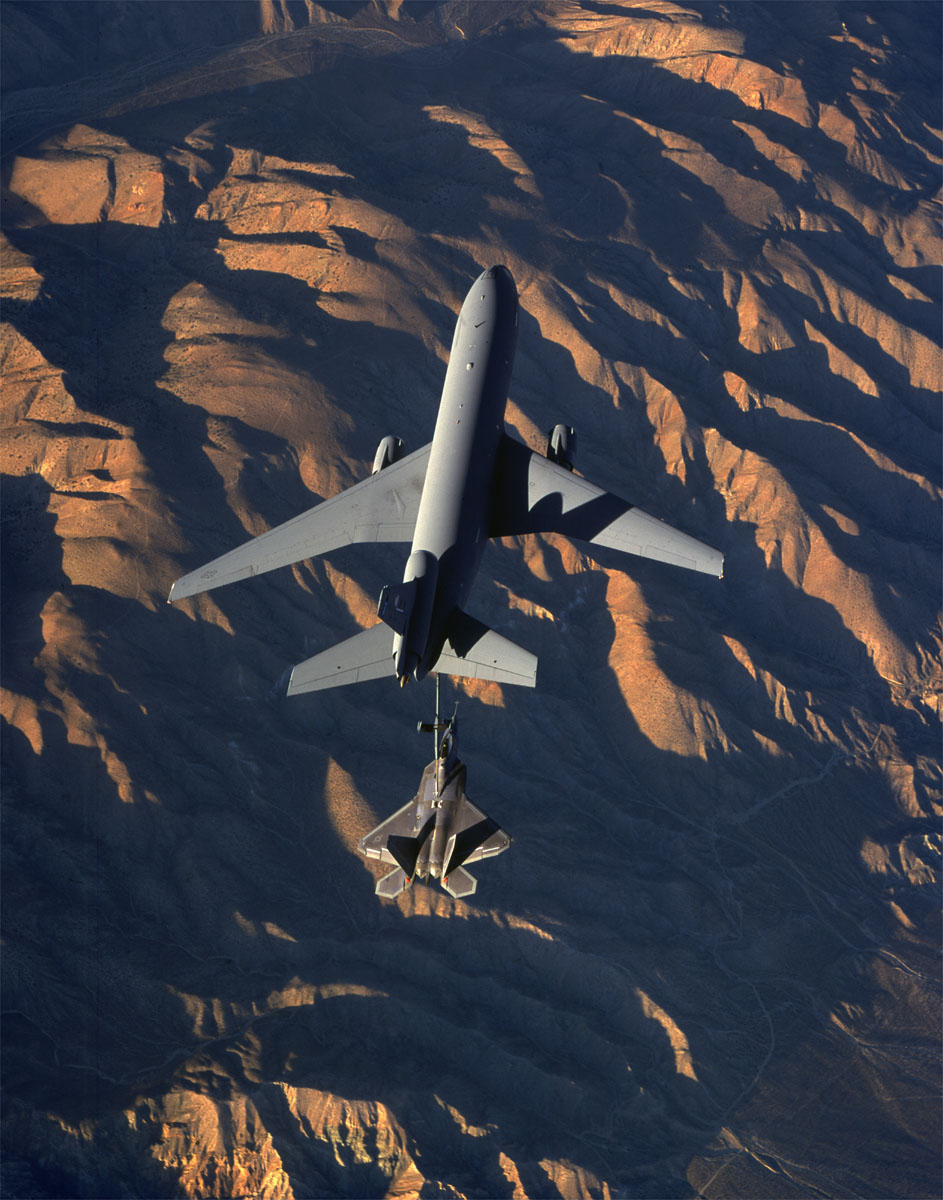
Sunset refueling

FILE PHOTO -- A KC-10 Extender from Travis Air Force Base, Calif., refuels an F/A-22 Raptor. The Raptor is the replacement for the F-15 Eagle. It is the most advanced fighter aircraft in the world, combining a revolutionary leap in technology and capability with reduced support requirements and maintenance costs. The F/A-22's integrated avionics gives it first-look, first-shot, first-kill capability that guarantees U.S. air dominance for decades.